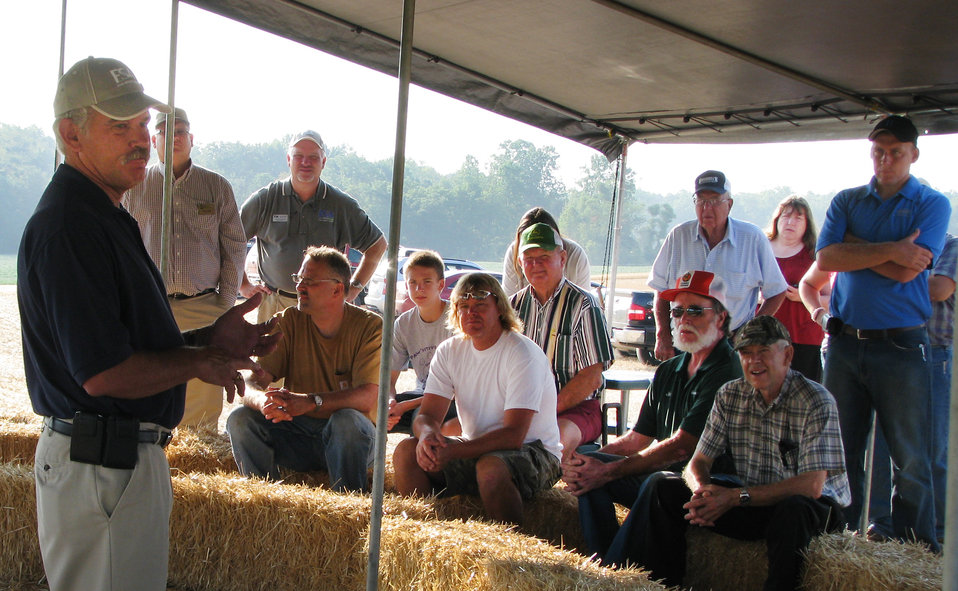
Agriculture Under Secretary for Farm and Foreign Agriculture Service (FFAS) Michael Scuse (left) speaks to the farmers about the drought conditions being felt across the country on the Shaefer Farm in Allen County, IN on Thursday, July 19, 2012. Agriculture Secretary Vilsack has instructed Agriculture subcabinet leaders to travel to affected drought areas to augment ongoing assistance from state-level U.S. Department of Agriculture (USDA) staff and provide guidance on USDA’s new, streamlined disaster process. The U.S. Drought Monitor currently reports that 61 percent of the continental United States is in a moderate to exceptional drought.